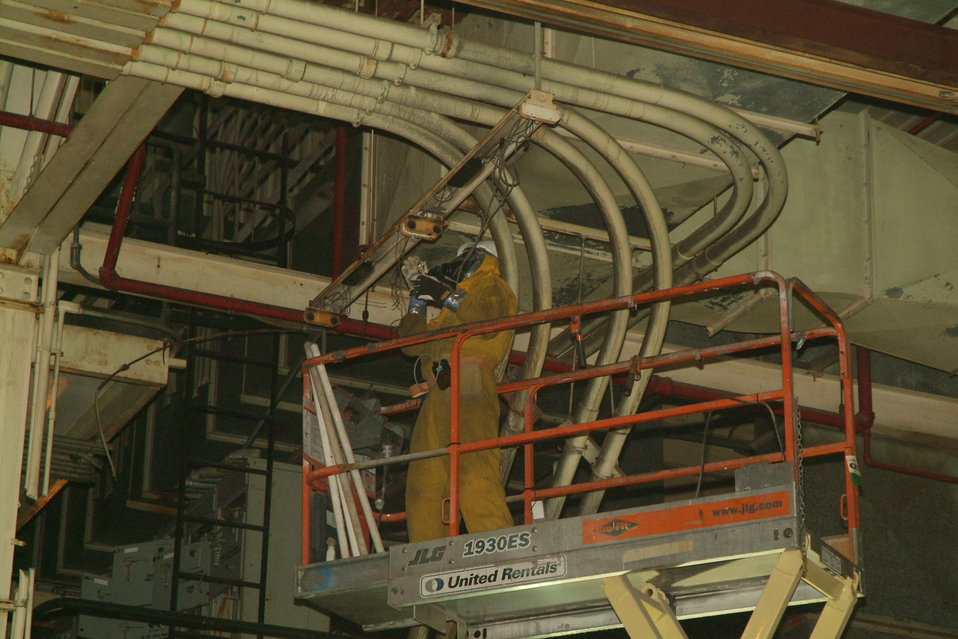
Paducah Recovery Act work

A Recovery Act worker removes a light fixture in the Metals Plant to prepare the facility for demolition.